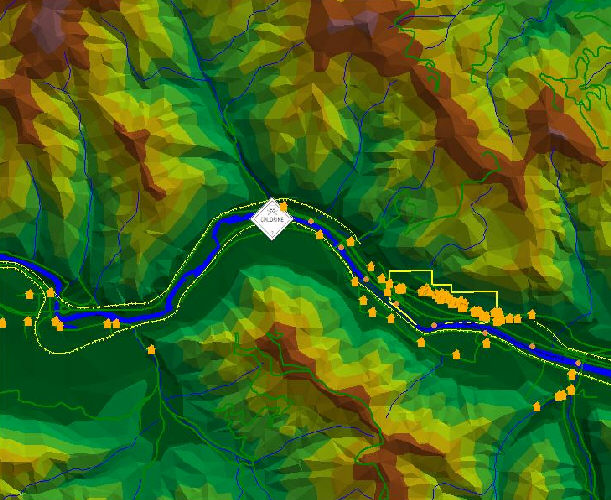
Map of Alberton, Montana US Chlorine Spill Investigation